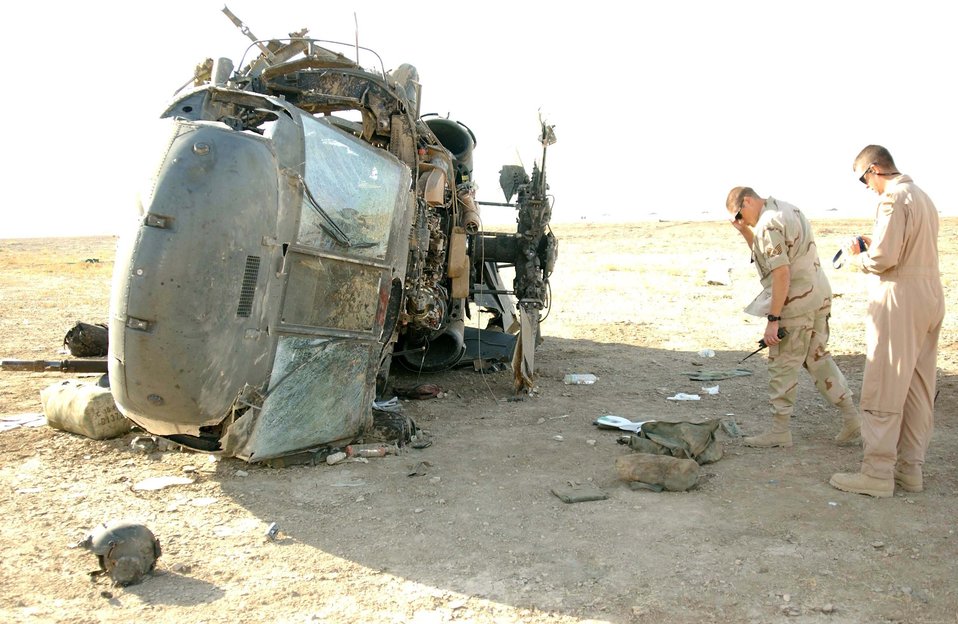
Airmen help save lives following UH-60 crash at Tallil

TALLIL AIR BASE, Iraq -- Local safety officials inspect the wreckage of a Sept. 21 Army UH-60 Blackhawk crash here. All four Soldiers on board were rescued from the helicopter by people of the 407th Air Expeditionary Group and 407th Expeditionary Medical Squadron.